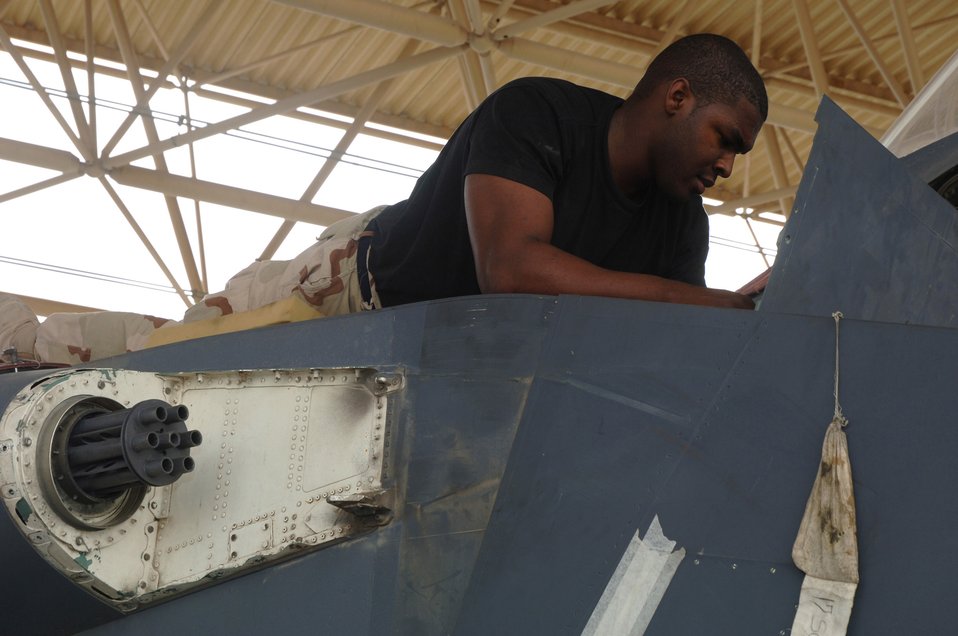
Deployed F-15s

An Airman with the 379th Expeditionary Aircraft Maintenance Squadron inspects an F-15E Strike Eagle at a forward-deployed location in Southwest Asia, on Wednesday, April 5, 2006. The F-15E is a dual-role fighter designed to perform air-to-air and air-to-ground missions. It is deployed from Seymour Johnson Air Force Base, N.C.